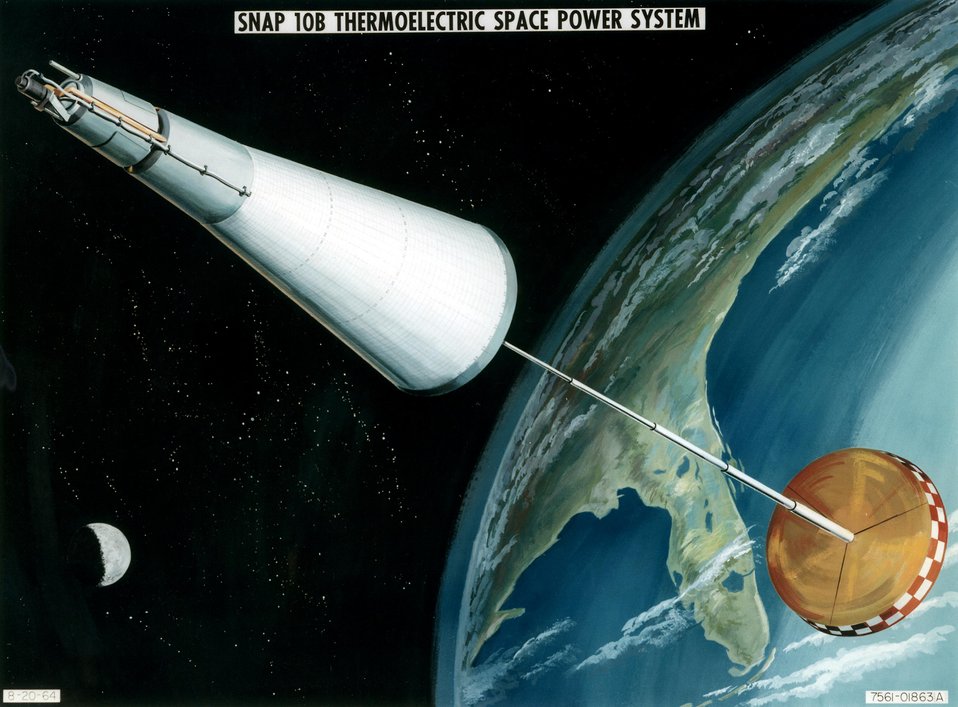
Reactor (Advanced T/E)-Communications